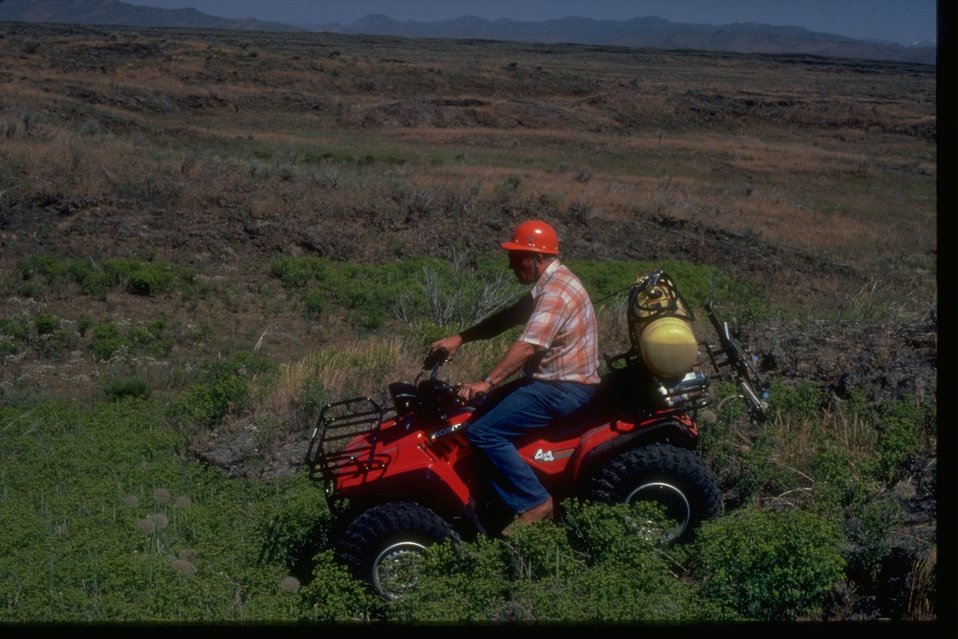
Someone on ATV in process of hericide application.